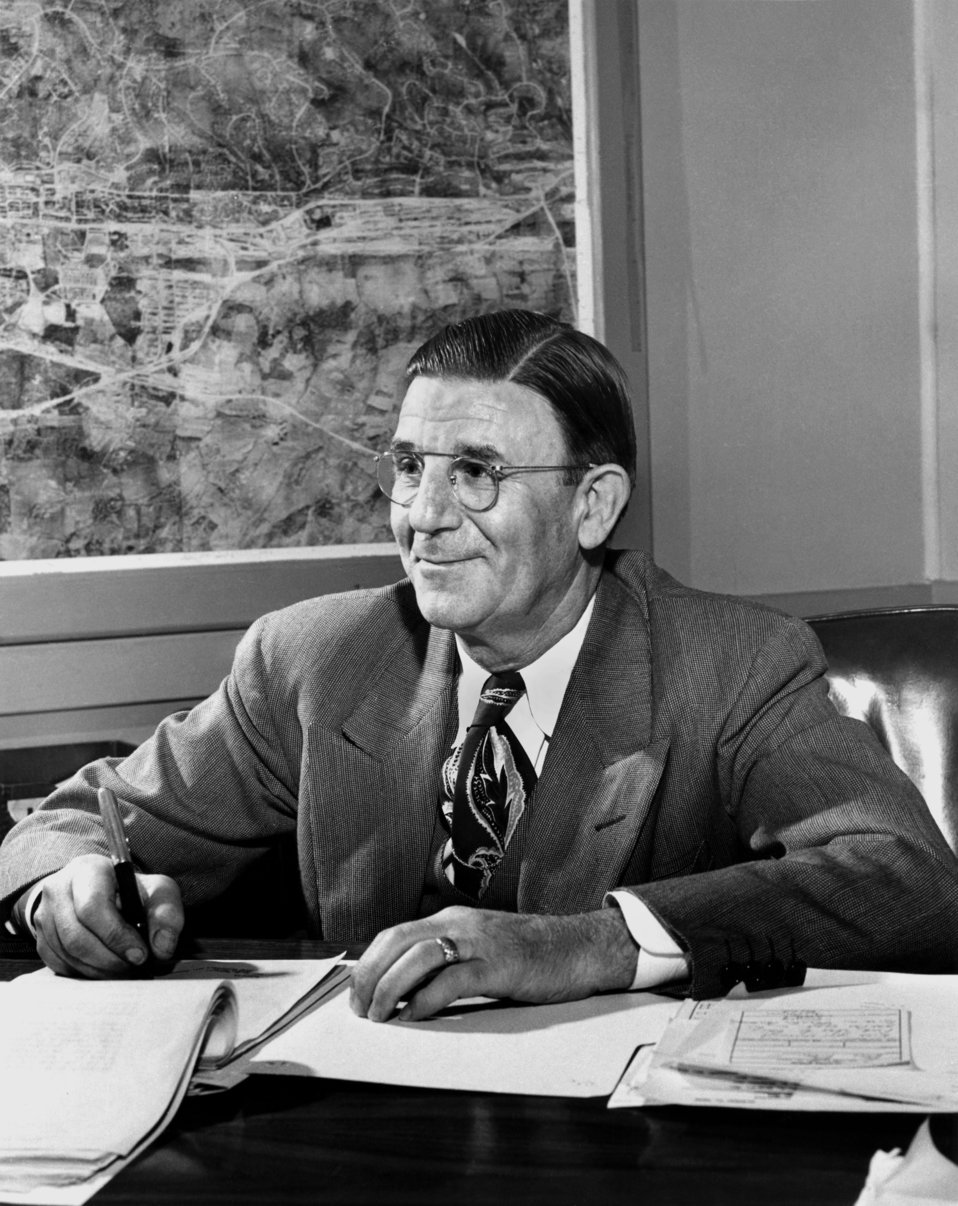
Fred Ford Oak Ridge 1948

5258-4 DOE photo Ed Westcott 10-8-1948 Oak Ridge Tennessee